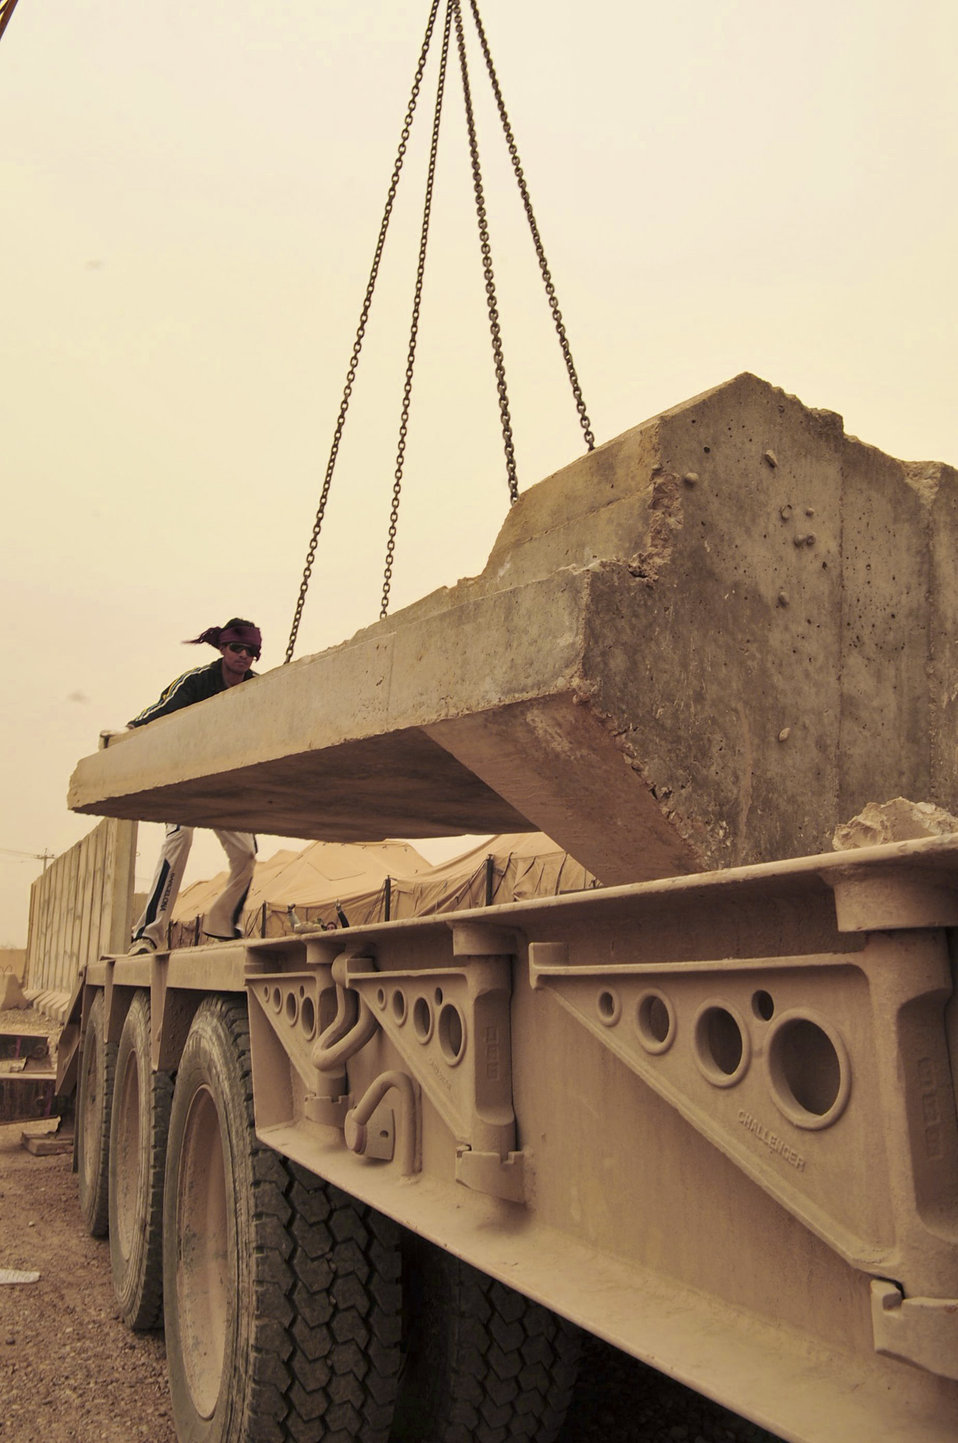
Airmen prepare Iraq bases for transition

In the middle of an orange haze during a sand storm in the Iraqi desert, an Iraqi contractor rigs a T-wall concrete barrier onto a flatbed truck, March 3, 2011, at Victory Base Complex in Baghdad. The local-national contractor is supporting a partnered effort to turn-over 1,200 U.S. forces T-walls to the Iraqi army. A T-wall section weighs 6 tons and is 12-feet tall.